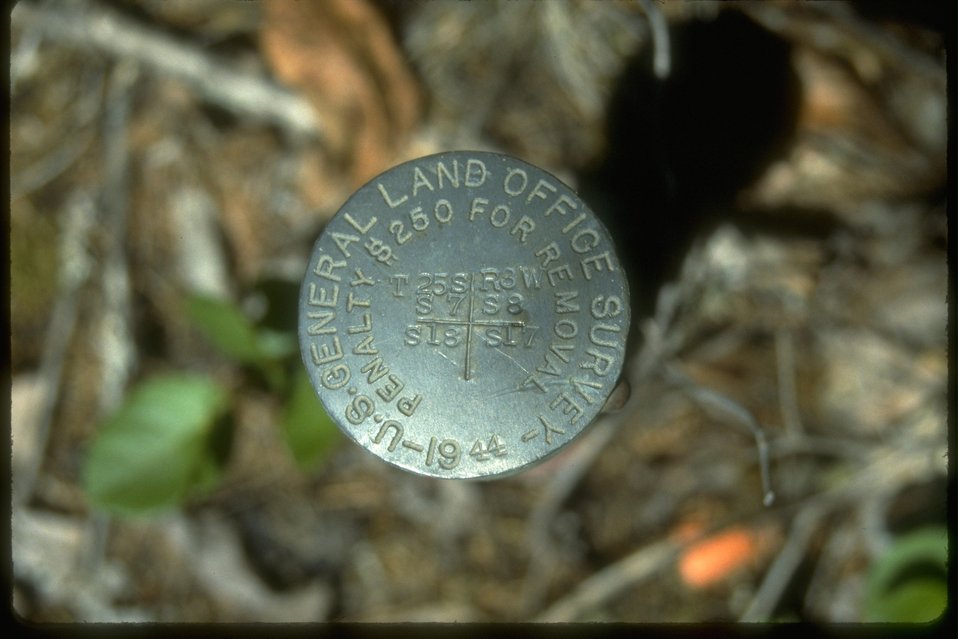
A Survey marker.